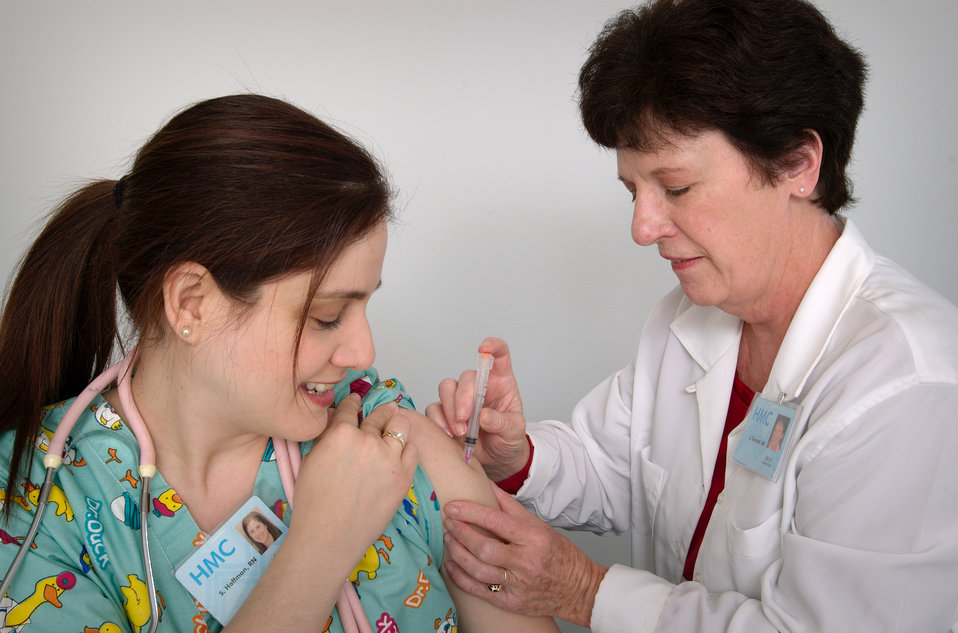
This 2006 photograph depicted a nurse who was administering an intramuscular vaccination into the left shoulder muscle of fellow nurse, while stabilizing the injection site with her free hand.The following pertains to healthcare workers:INFLUENZA: